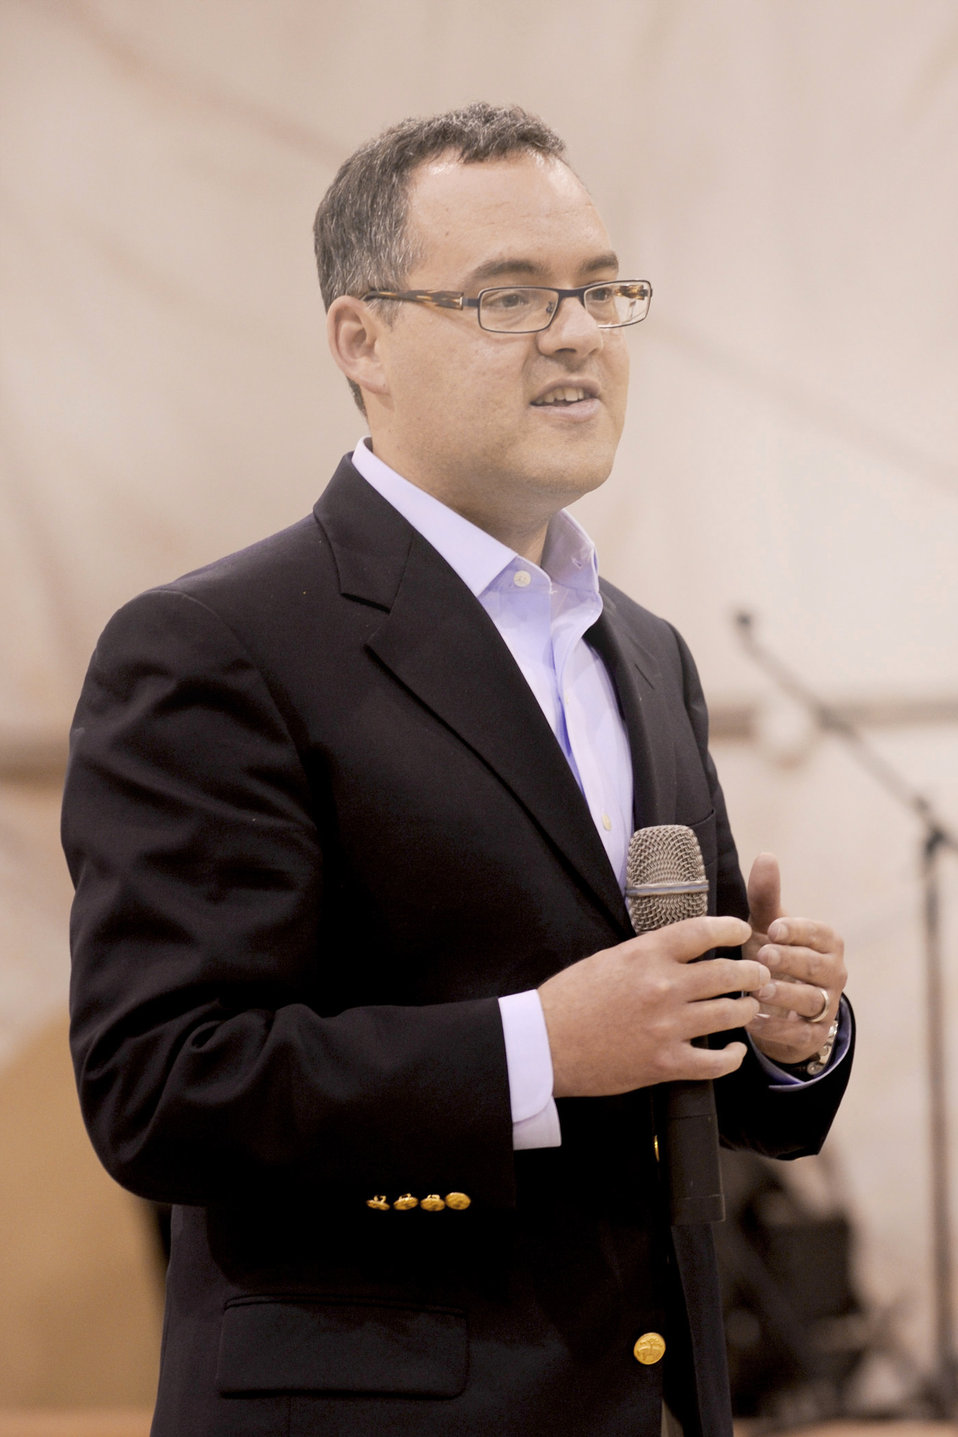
Assistant Secretary of Air Force visits Baghdad

Daniel Ginsberg talks with Airmen from Sather Air Base, Iraq, Jan. 21, 2011. Mr. Ginsberg toured Iraq to discuss the Air Force's progress in the drawdown of U.S. forces in country. Mr. Ginsberg is the Assistant Secretary of the Air Force for Manpower and Reserve Affairs.